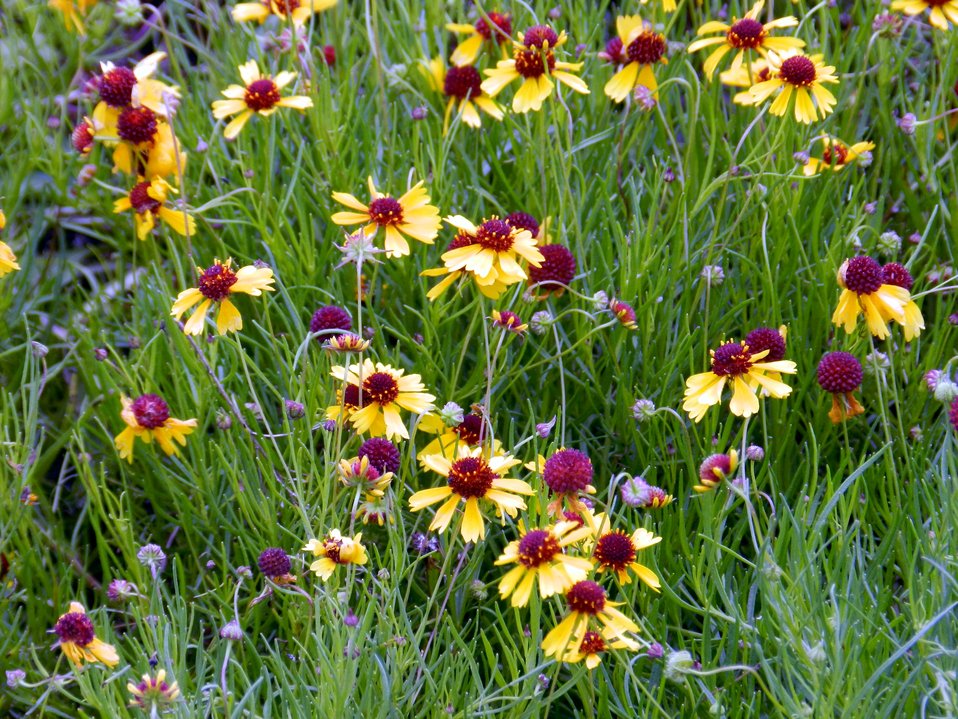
Coneflowers, Prairie Dog Town

Wildflowers at Wichita Mountains Wildlife Refuge in Oklahoma.